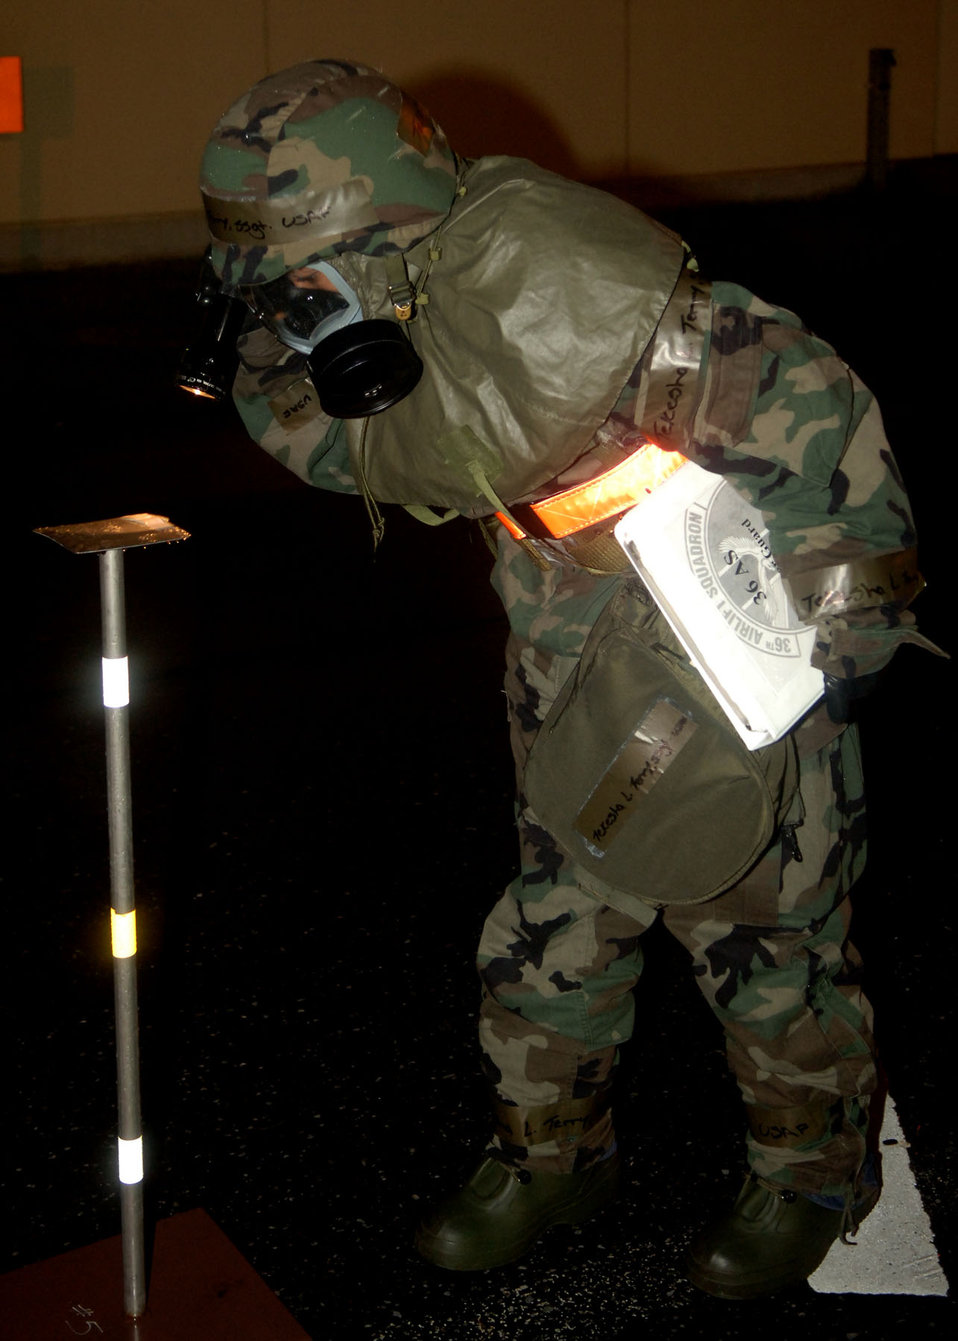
Practicing to stay safe

Staff Sergeant Tekesha Terry checks for possible signs of contamination while on a post-attack sweep during an exercise at Yokota Air Base, Japan. The 374th Air Wing was conducting the exercise to test Airmen's responses to chemical or biological hazards. Sergeant Terry is with the 36th Airlift Squadron.